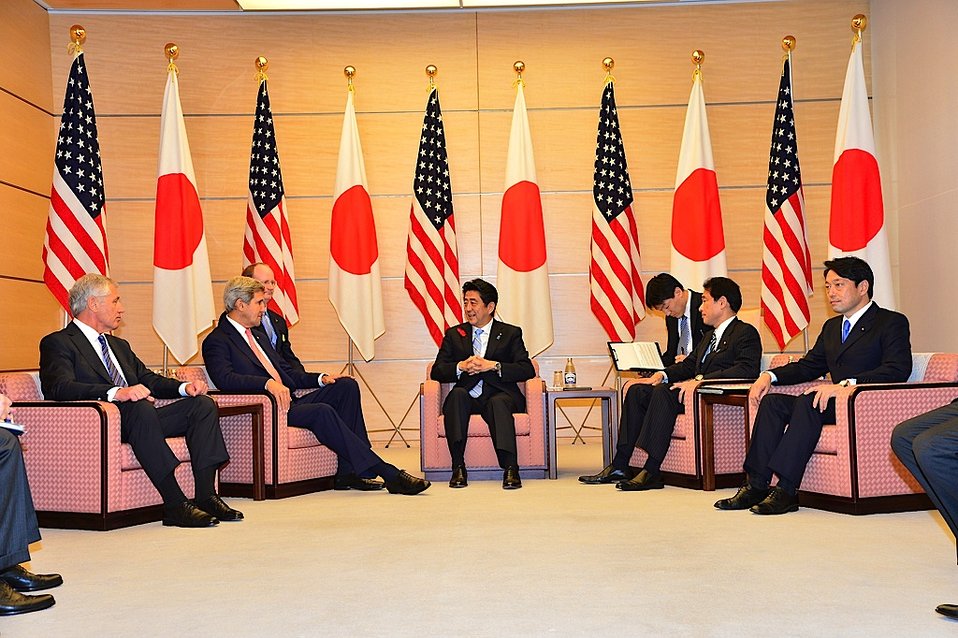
U.S.-Japan Security Consultative (2 2) Meeting in Tokyo

U.S. Secretary of State John Kerry and U.S. Secretary of Defense Chuck Hagel meet with Prime Minister Shinzo Abe at the prime minister's official residence in Tokyo on October 3, 2013.